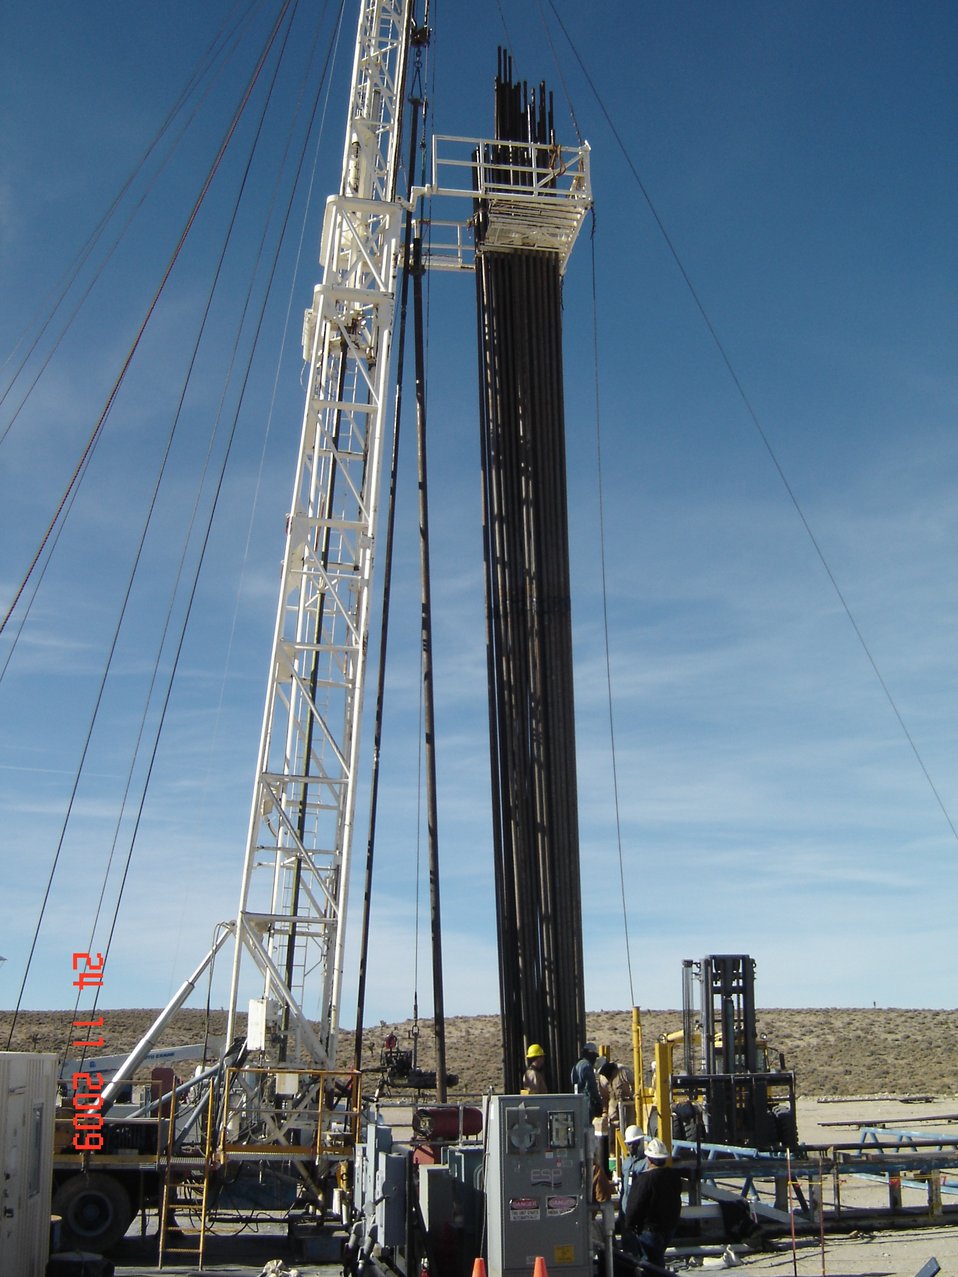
Recovery Act Accelerates Construction of Wells at NNSS

Workers built ER-20-8, the first of two Recovery Act-funded wells, in the fall of 2009.
The wells will help NNSS study groundwater contaminants.